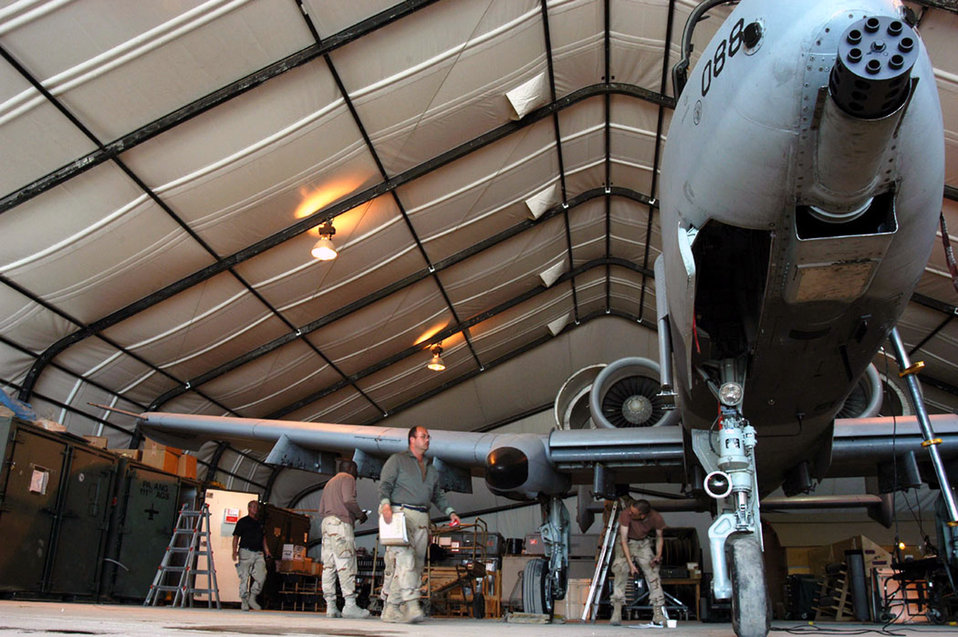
Contingency phase maintenance

1990's -- OPERATION ENDURING FREEDOM -- Maintenance technicians with the 104th Expeditionary Fighter Squadron at Bagram Air Base, Afghanistan replace parts on the first A-10 going through contingency phase maintenance here. Maintainers here say they are accomplishing the first-ever contingency phase maintenance on the A-10 in the field.